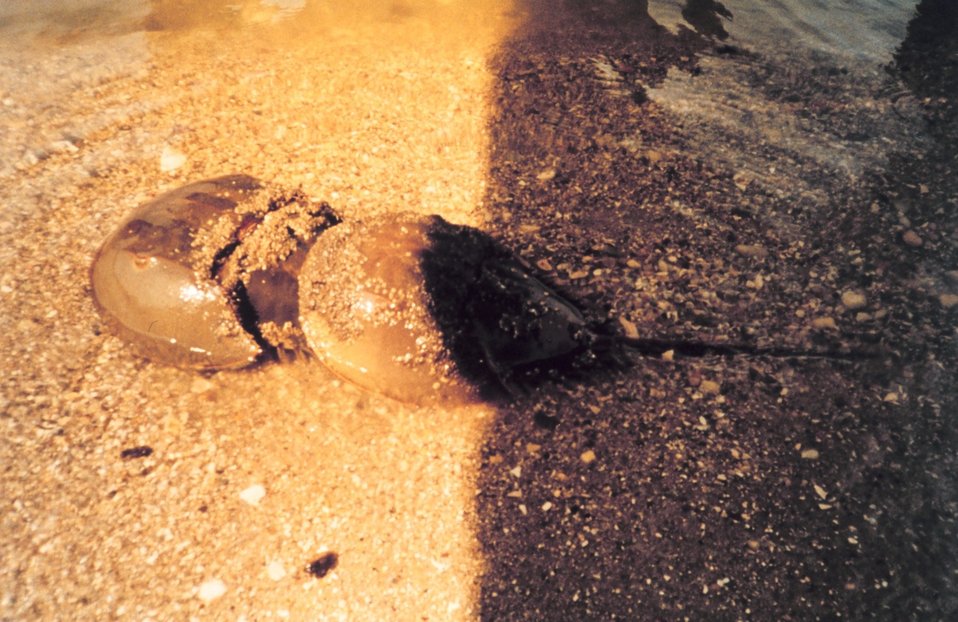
Mating pair of horseshoe crabs